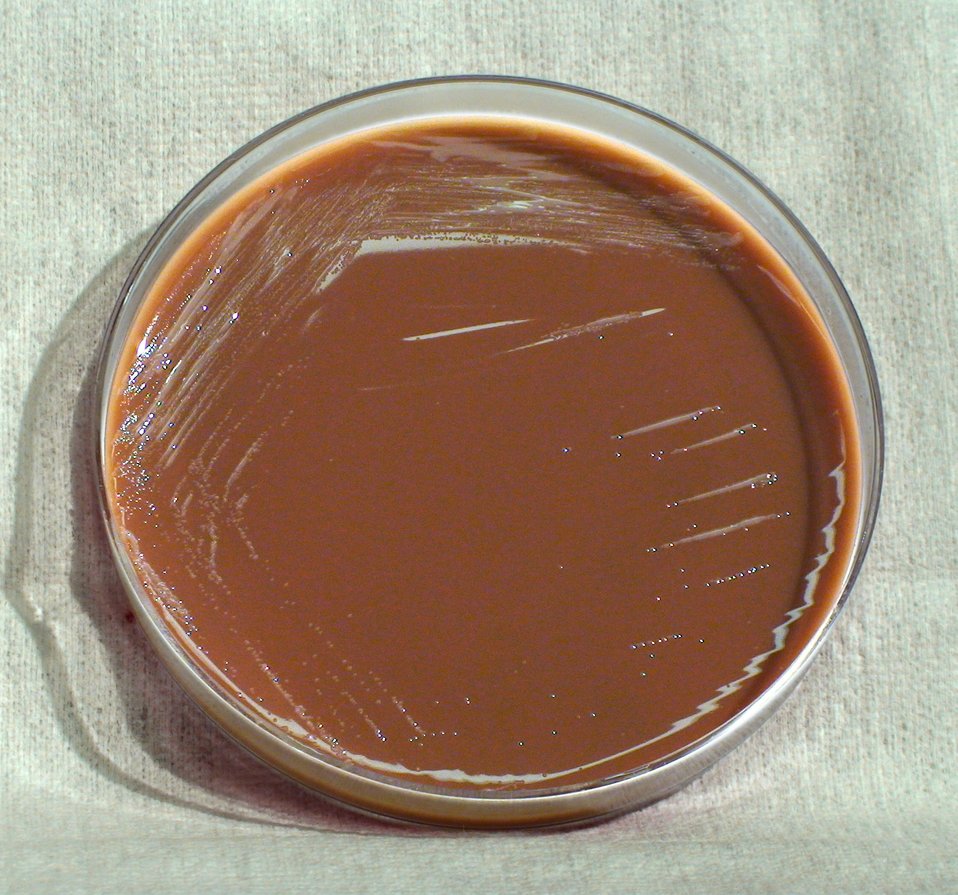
This photograph depicts the colonial morphology displayed by Gram-negative Brucella melitensis bacteria, which was grown on a medium of modified Thayer-Martin agar, for a 72 hour time period, at a temperature of 37�C. See also, PHIL 12399 for a view of this bacterial specie, colonized on sheep's blood agar (SBA), for the same amount of time and temperature; PHIL 12400, for B. melitensis bacteria grown on SBA at the same temperature, but for a lesser time period (48hr); PHIL 12452, for B. melitensis bacteria grown on SBA at the same temperature, but for one-third the time period (24hr). Brucella spp. bacteria are responsible for causing the disease known as brucellosis.